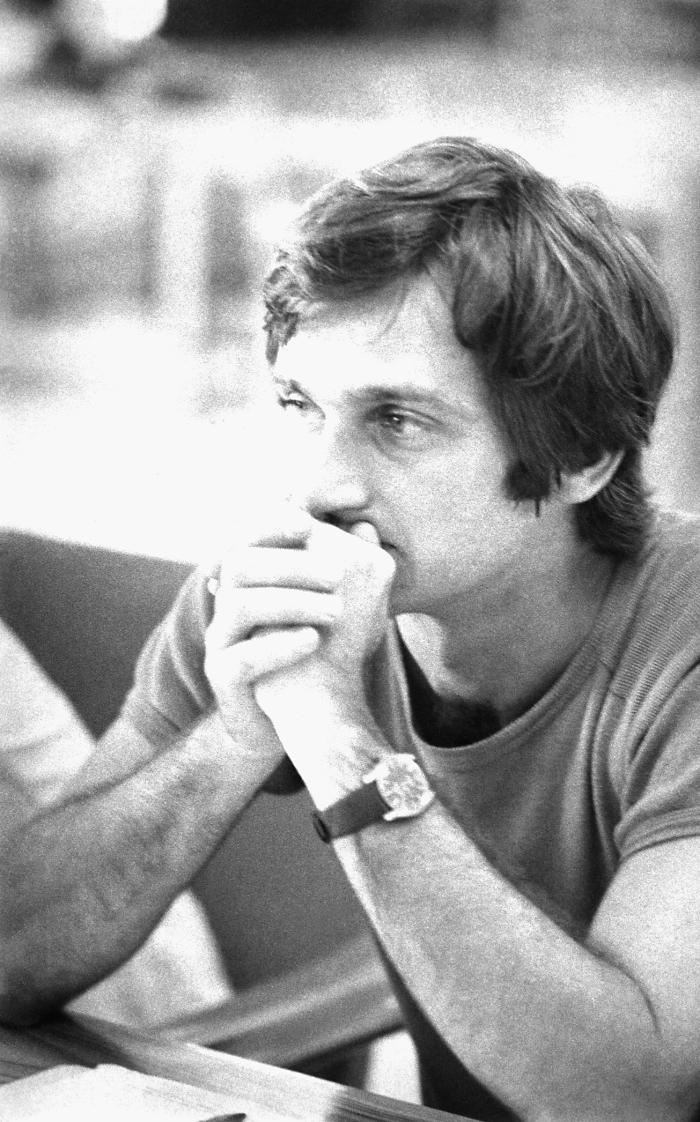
This was smallpox eradication team member Prof. Christian Vutuc, M.D., photographed in 1975 while he was attending one of the scheduled meetings in Bangladesh. The worldwide eradication efforts were manned by a participatory conglomeration of all nations, reflecting the global desire to conquer this dreaded disease.